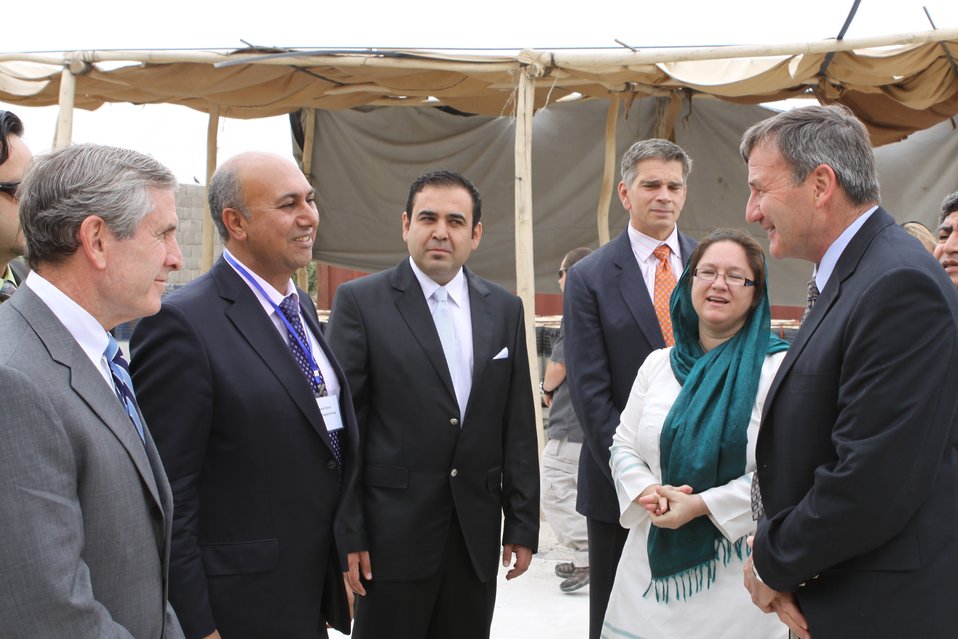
100525 Hirat Marble Conference 045